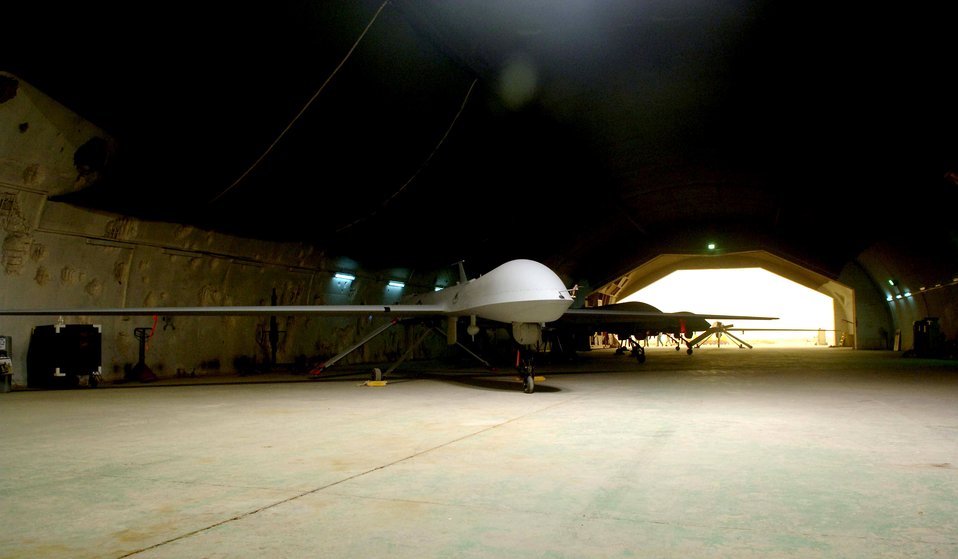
Predators wait to soar into Iraqi sky

An MQ-1 Predator unmanned aerial vehicle sits in its hangar waiting for it next mission in May at Balad Air Base, Iraq. The Predator provides armed reconnaissance, airborne surveillance and target acquisition for coalition forces. The Predator carries the Multispectral Targeting System with AGM-114 Hellfire missile targeting capability and integrates electro-optical, infrared, laser designator and laser illuminator into a single sensor package. The aircraft can employ two laser-guided Hellfire anti-tank missiles with the MTS ball.